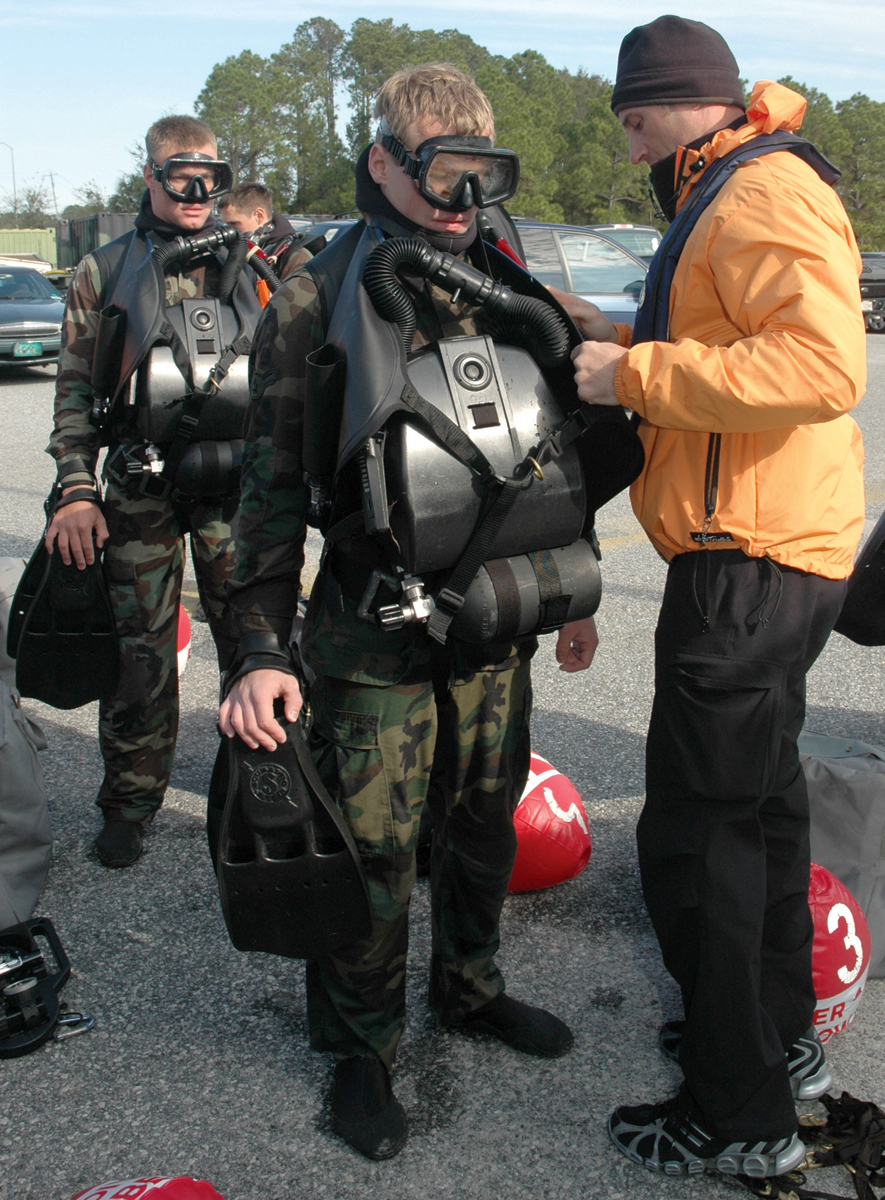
Combat Dive Course

Tech. Sgt. Sean McGinley, instructor, inspects Airman 1st Class Conor Wesling, a Combat Dive Course pararescueman student. Instructors inspect each student before the students dive to ensure their equipment in connected correctly.